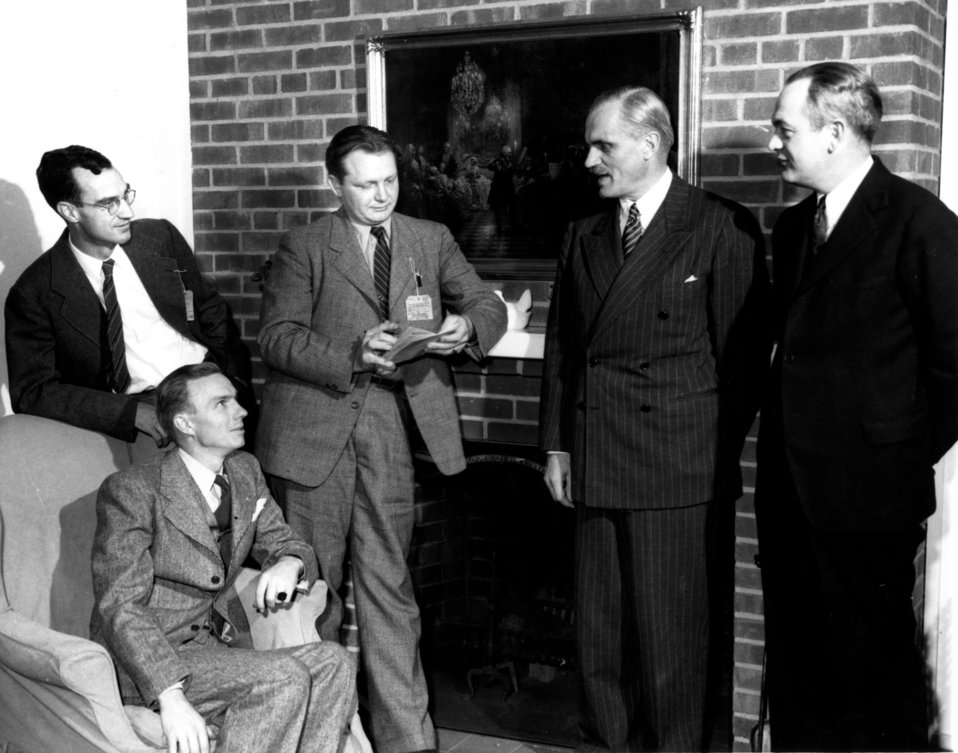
Notable persons at Oak Ridge